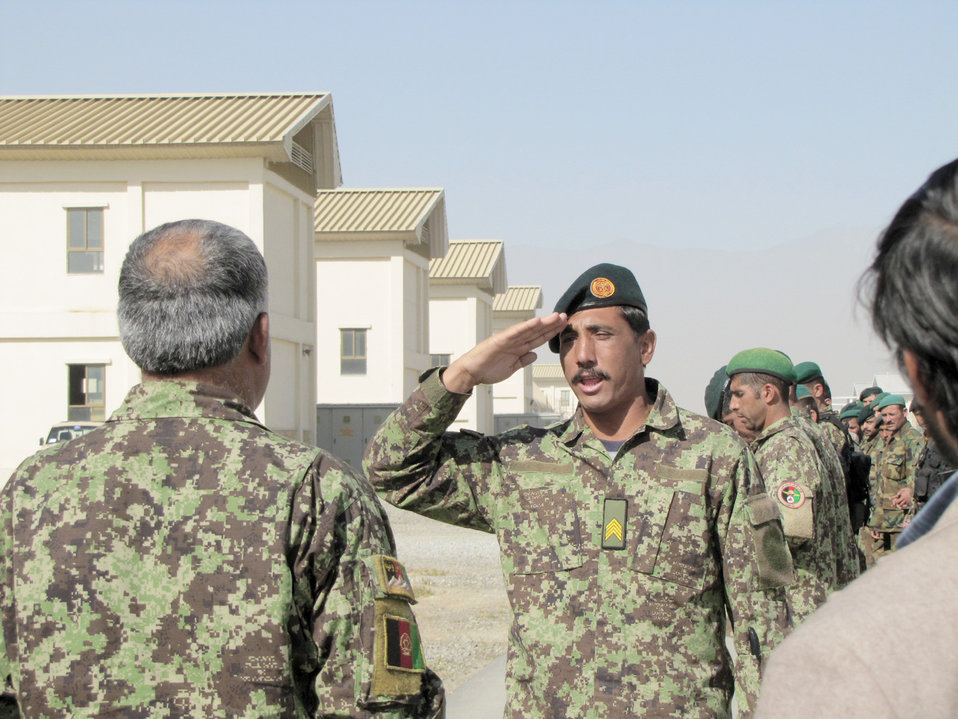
Afghan air force members attend fly-away security team training

Afghan air force security forces members graduate from fly away training on Oct 4, 2010, in Kabul, Afghanistan.